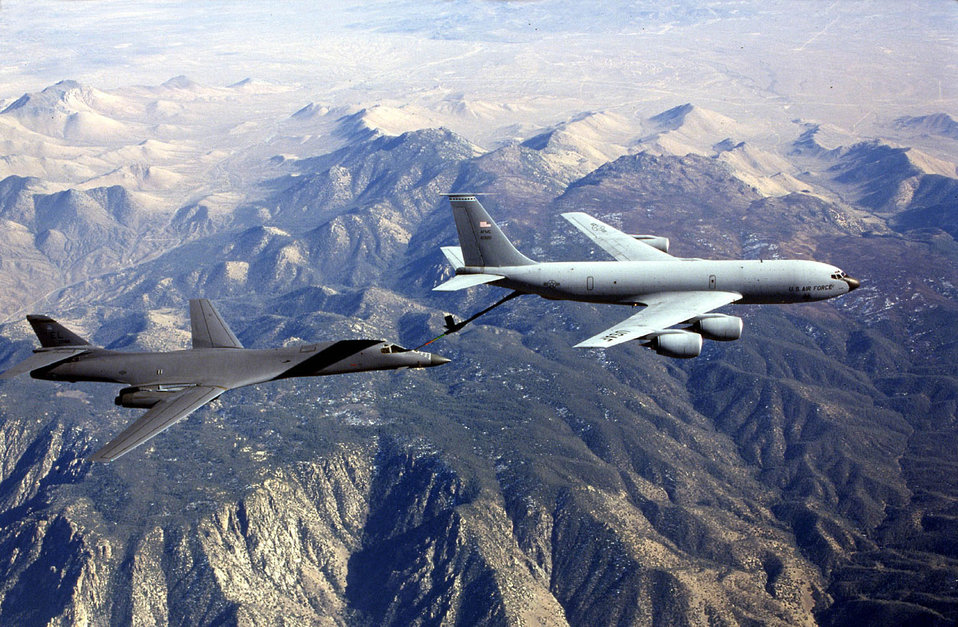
Thirsty Lancer

FILE PHOTO -- A KC-135 Stratotanker refuels a B-1 Lancer while on a training mission. The KC-135's principal mission is air refueling. This asset greatly enhances the U. S. Air Force's capability to accomplish its mission of Global Engagement. It also provides aerial refueling support to U.S. Navy, U.S. Marine Corps and allied aircraft.